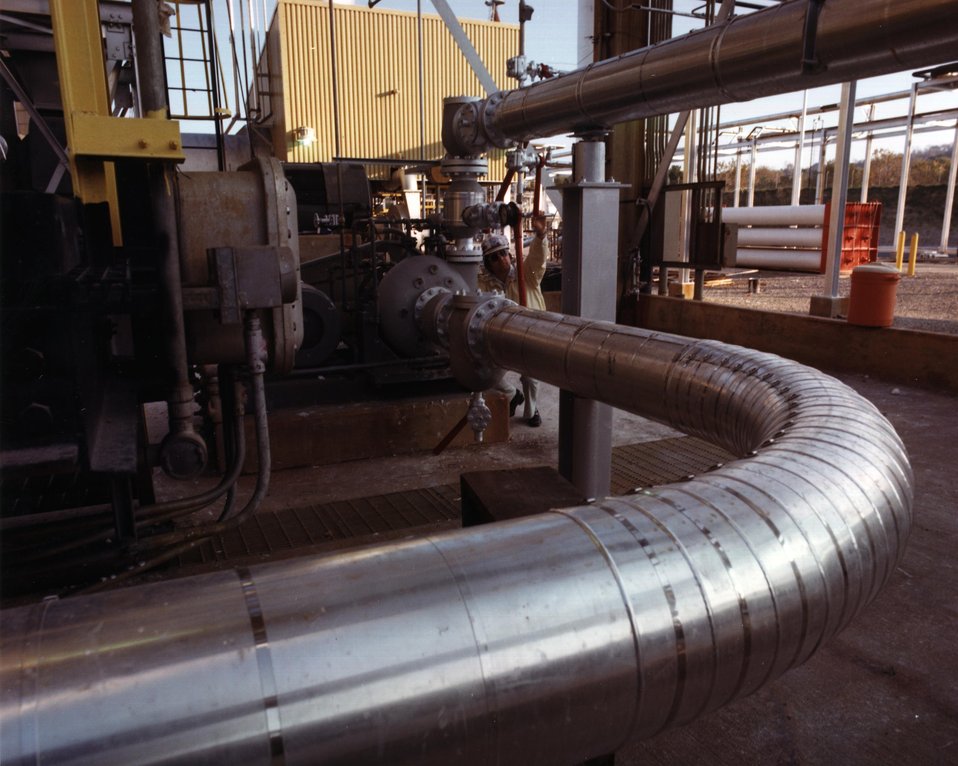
LOW PRESSURE SLURRY LINES AND MIX TANK DISCHARGE AT THE PARTIALLY-CONSTRUCTED H-COAL 600-TONS-PER-DAY PILOT PLANT.